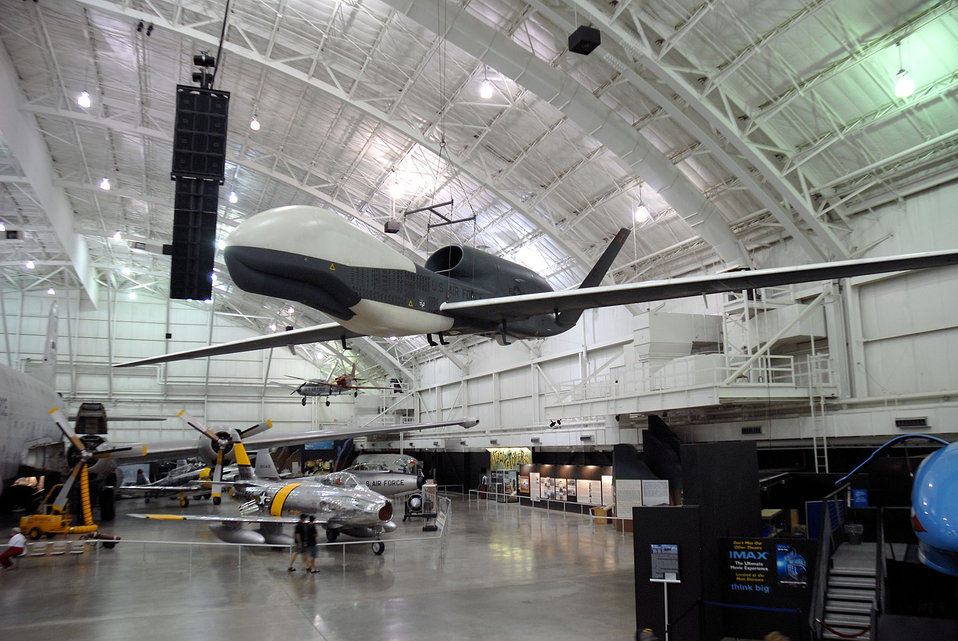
New Global Hawk exhibit opens at museum

An RQ-4A Global Hawk is on display at the Modern Flight Gallery at the National Museum of the United States Air Force in Dayton, Ohio. The new exhibit opened Aug. 12.